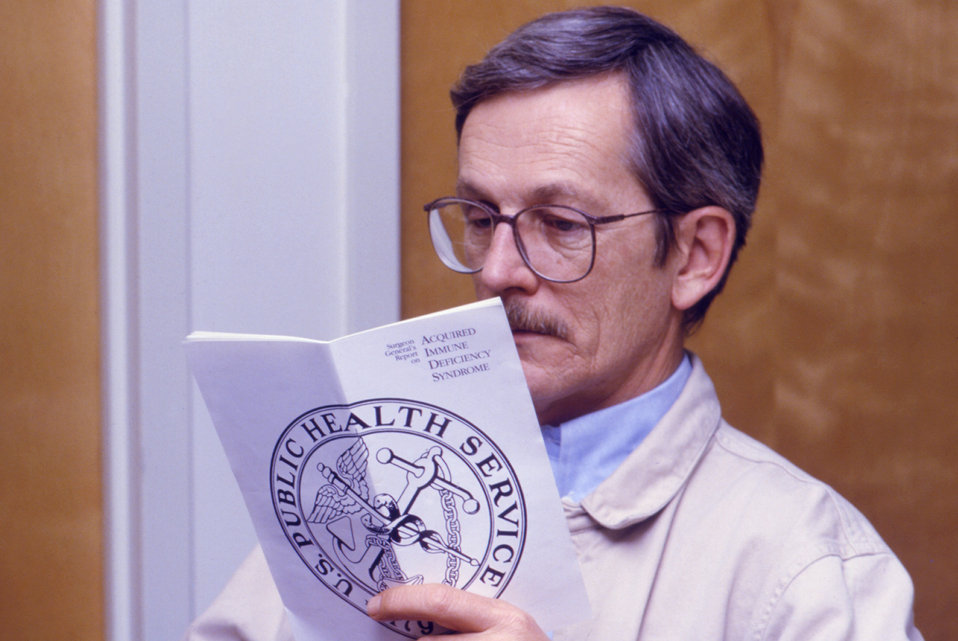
This photograph shows an employee reviewing CDC-published AIDS information.